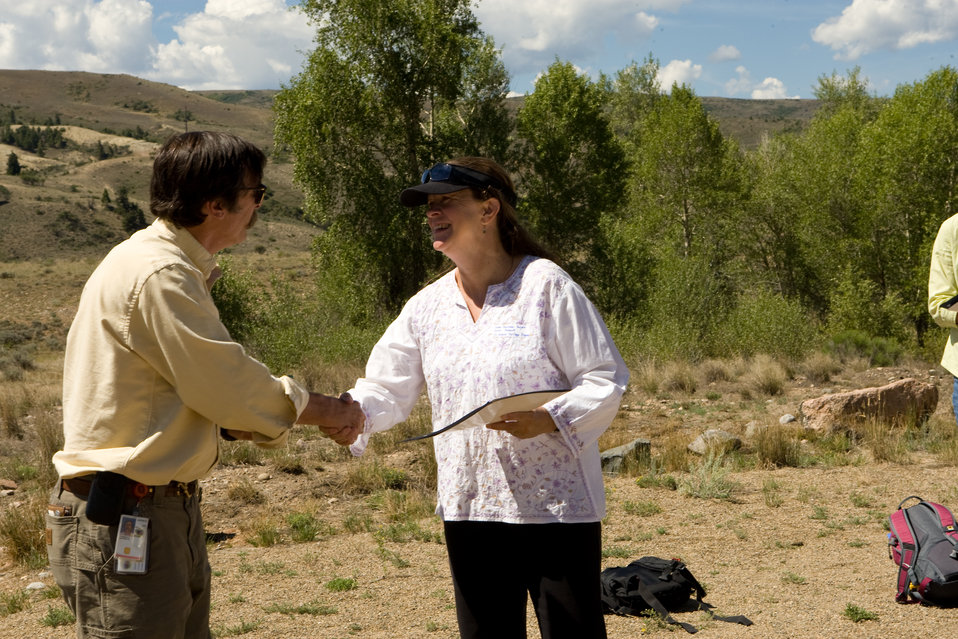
Colorado Rare Plant Conservation Initiative

The Colorado Rare Plant Conservation Initiative (RPCI) is a partnership of 23 statewide and regional agencies, private organizations, and academic institutions working to conserve 121 rare plants in Colorado. As part of these efforts the group developed the Colorado Rare Plant Conservation Strategy, developed Best Management Practices to reduce energy development impacts, addressed climate change, and developed focused strategies for the conservation of individual species at eight priority landscapes. The group has also worked to coordinate volunteer efforts for plant conservation across the state.